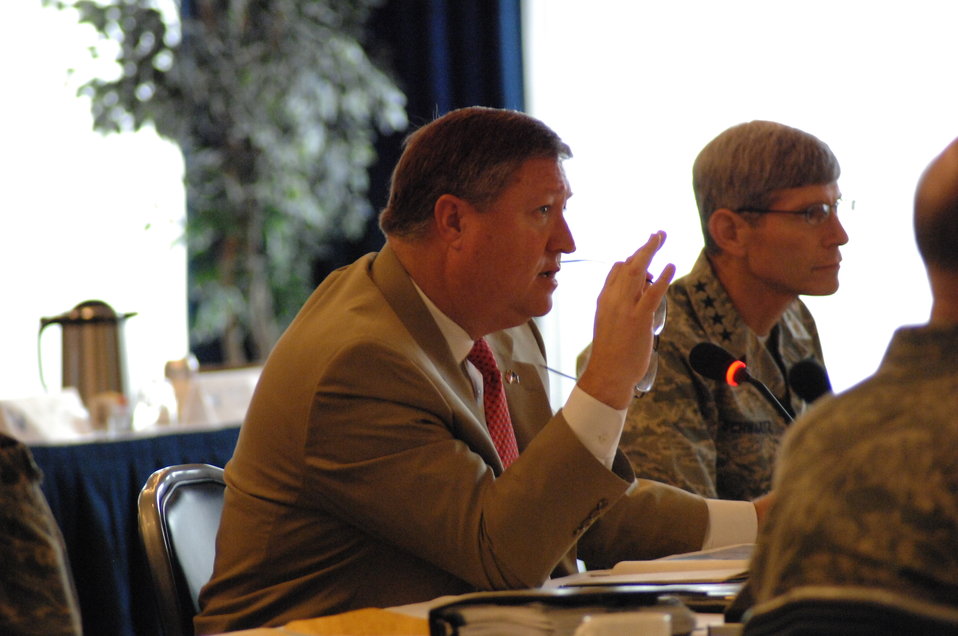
Senior leaders meet to discuss, decide way ahead for force

Acting Secretary of the Air Force Michael B. Donley speaks Aug. 27, during a strategic summit at Bolling Air Force Base, D.C.